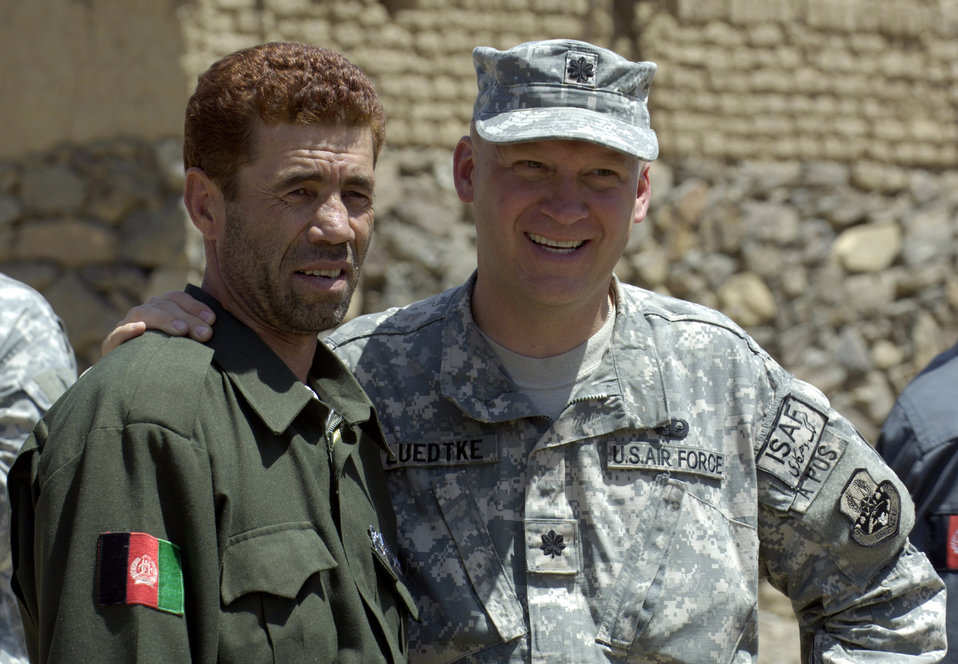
Airmen go hand-to-hand with Afghan National Police

Lt. Col. Christopher Luedtke and Anaba district police chief Zardot Towhidi watch as Panjshir Provincial Reconstruction Team members demonstrate maneuvers to members of the Afghan National Police Aug. 6. Colonel Luedtke, commander of the Panjshir PRT, brought members of his team to the district to provide training to Afghan National Police serving in the area. Colonel Luedtke is deployed from Hill Air Force Base, Utah.